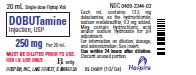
RECALLED - Dobutamine Injection, USP

May 14, 2014 - Product Recall - Hospira Announces Voluntary Nationwide Recall Of One Lot Of Dobutamine Injection, USP, 250 MG, 20 ML, Single-Dose Fliptop Vial, Due To Visible Particulates.